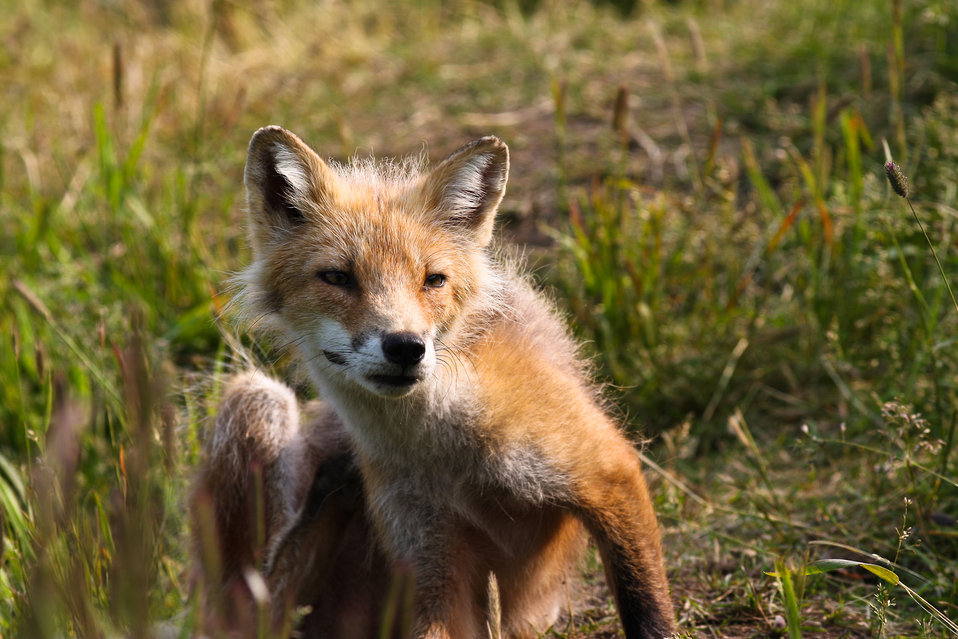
Frazer Fox

Red fox at Frazer Lake.
Lisa Hupp/USFWS